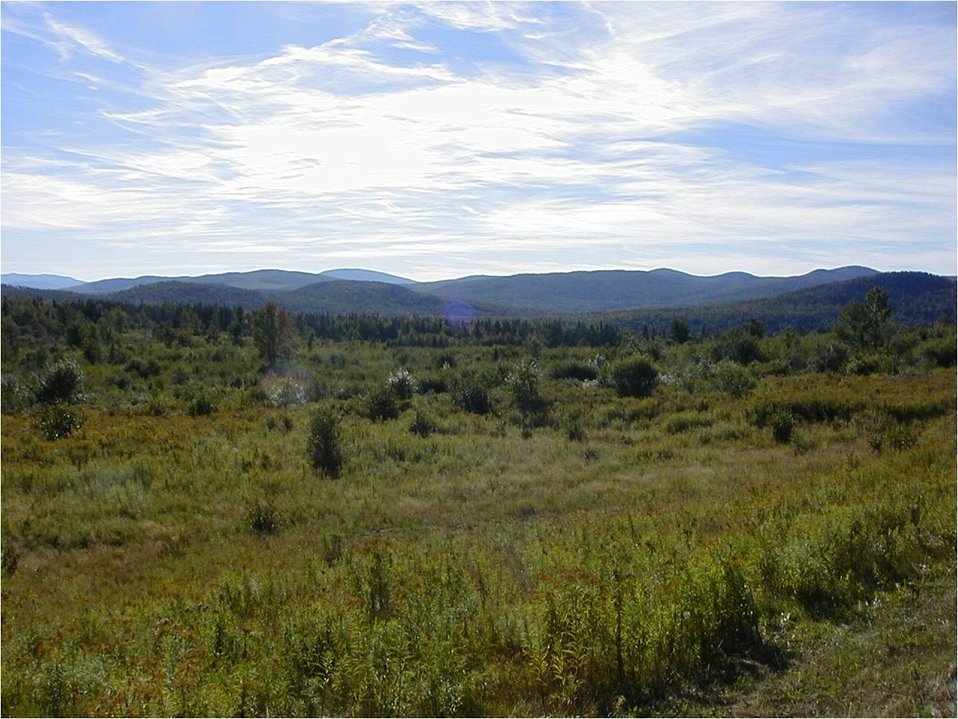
Mountain top basin and forest